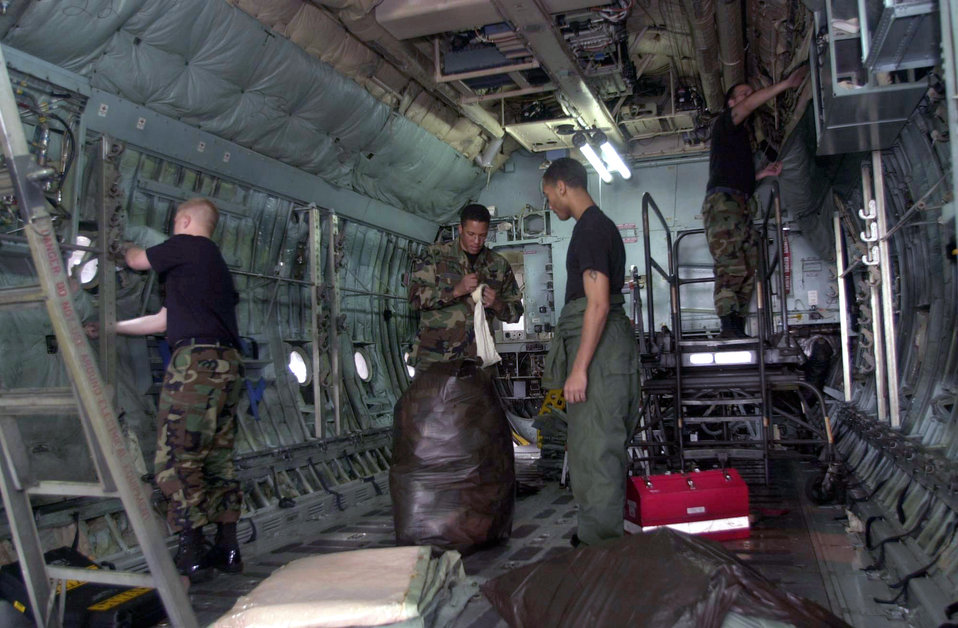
Insulating aircraft

YOKOTA AIR BASE, Japan -- Survival equipment technicians from the 374th Maintenance Squadron here remove insulation panels in a C-130 Hercules aircraft during a refurbishing program. The old green insulation is being replaced by a newer charcoal-gray colored insulation piece.